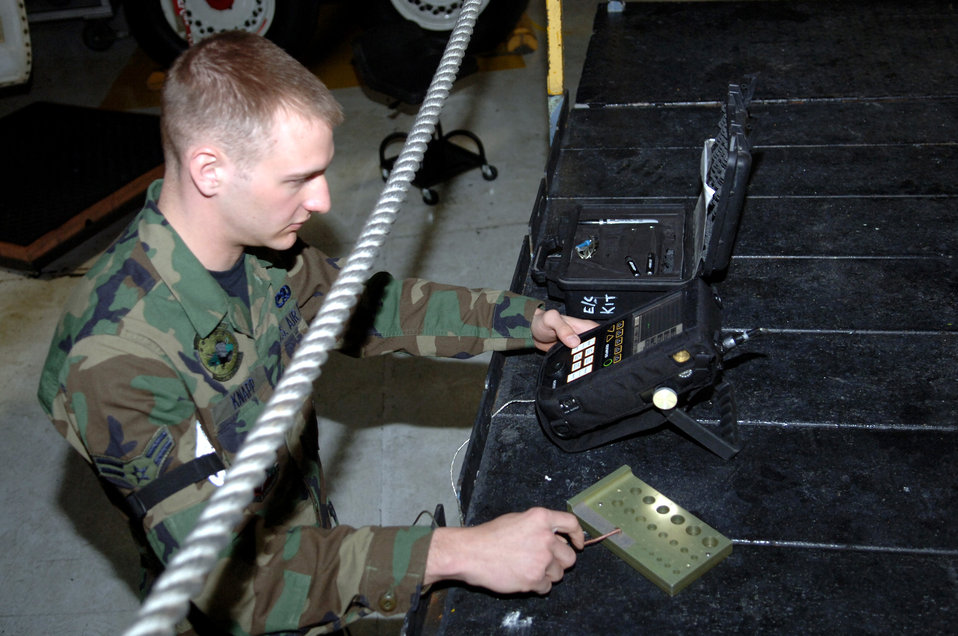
Inspections technician know-how

Airman 1st Class Trevor Knapp starts the Nortec 2000D to check for flaws and cracks on a B-1B Lancer at Ellsworth Air Force Base, S.D. Airman Knapp is a nondestructive inspections technician with the 28th Maintenance Squadron.